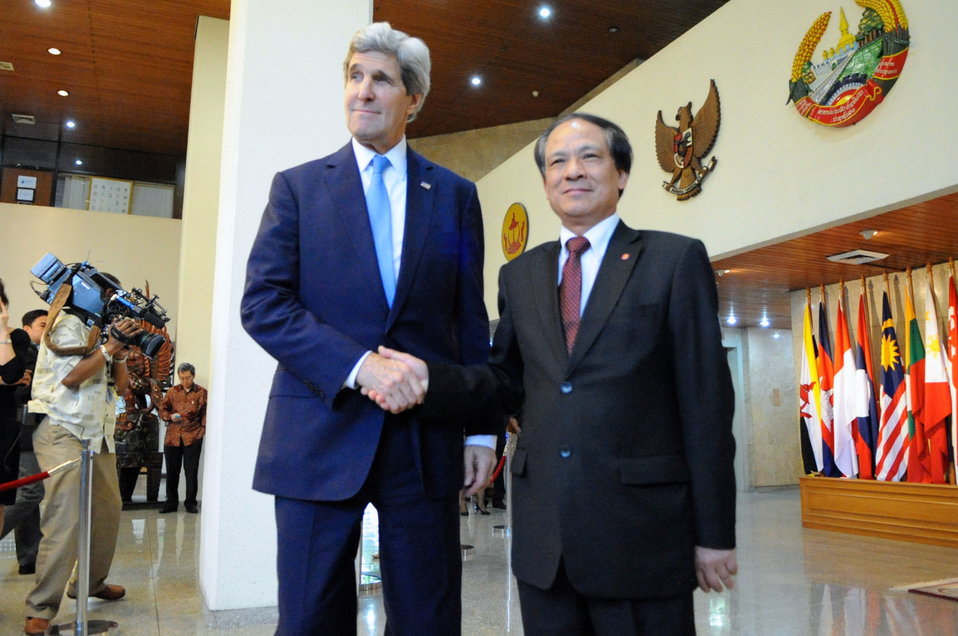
Secretary Kerry Shakes Hands With ASEAN Secretary-General Minh

U.S. Secretary of State John Kerry shakes hands with ASEAN Secretary-General Le Luong Minh before their meeting in Jakarta, Indonesia, on February 16, 2014.